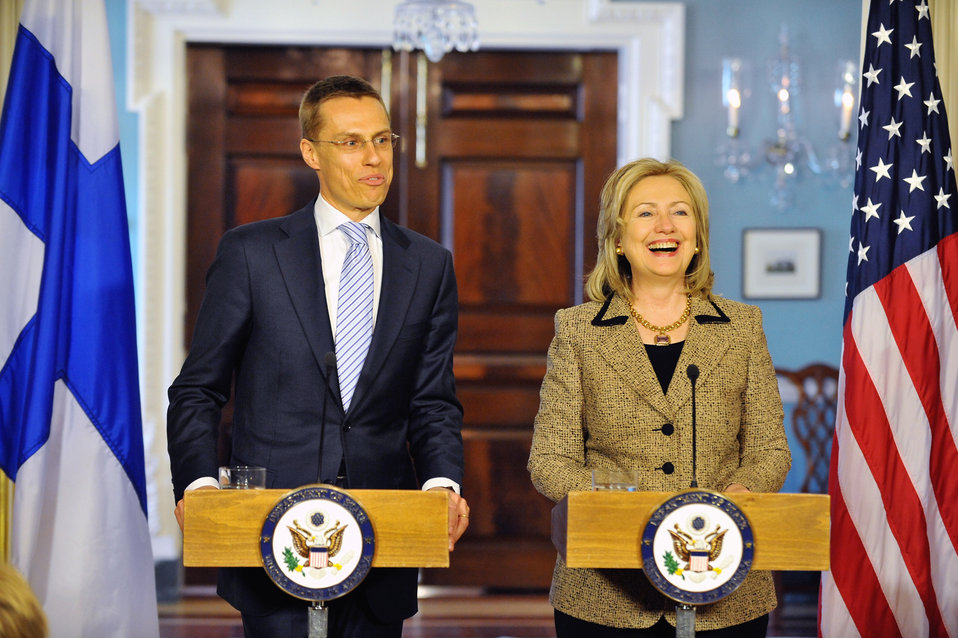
Secretary Clinton Meets With Finnish Foreign Minister Stubb

U.S. Secretary of State Hillary Rodham Clinton holds a joint press conference with Finnish Foreign Minister Dr. Cai-Goran Alexander Stubb after their bilateral meeting, at the U.S. Department of State in Washington, D.C., on April 11, 2011.